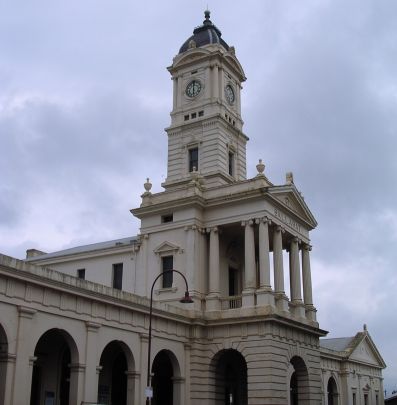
Ballarat Railway Station en:Category:Images of Ballarat